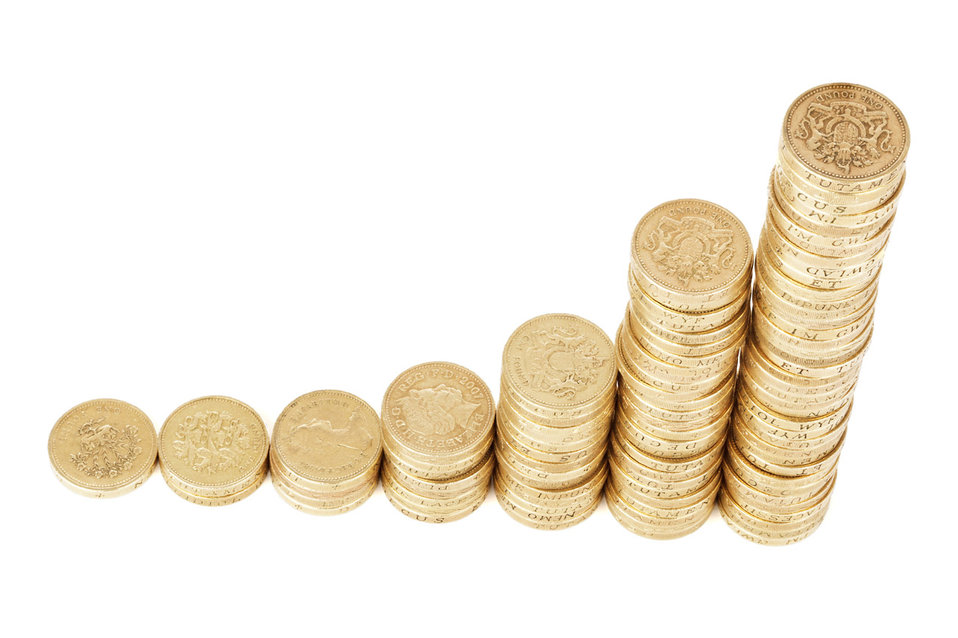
Money graph

Graph made of golden coins isolated on white background.